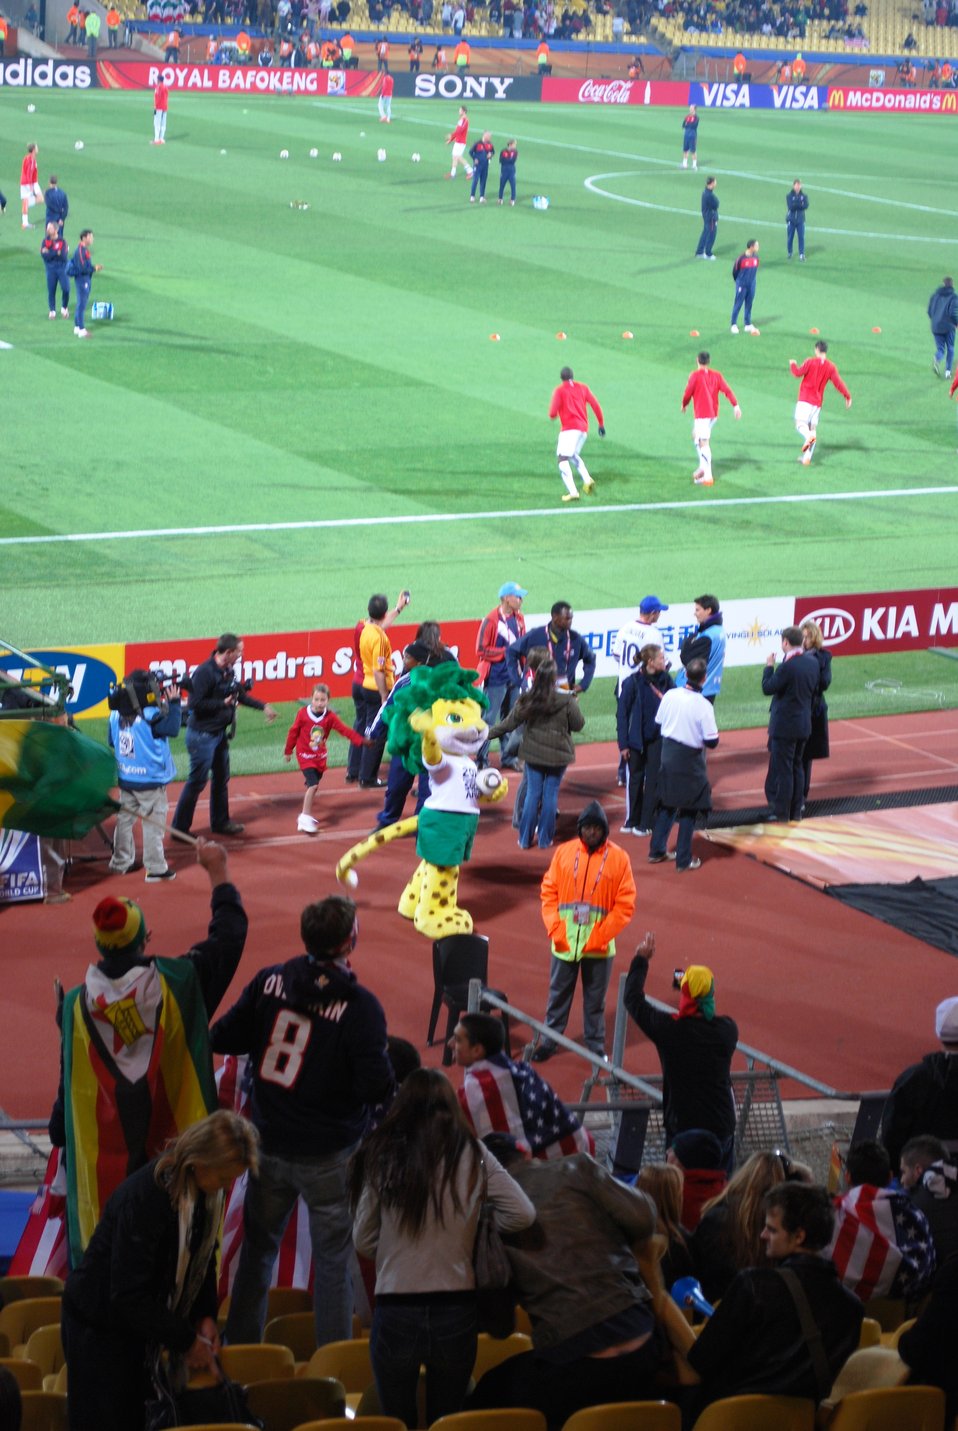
The U.S. Plays Ghana in World Cup Match

The United States plays Ghana in a FIFA 2010 World Cup soccer match on June 26, 2010, at the Royal Bafokeng stadium in Rustenburg, South Africa.